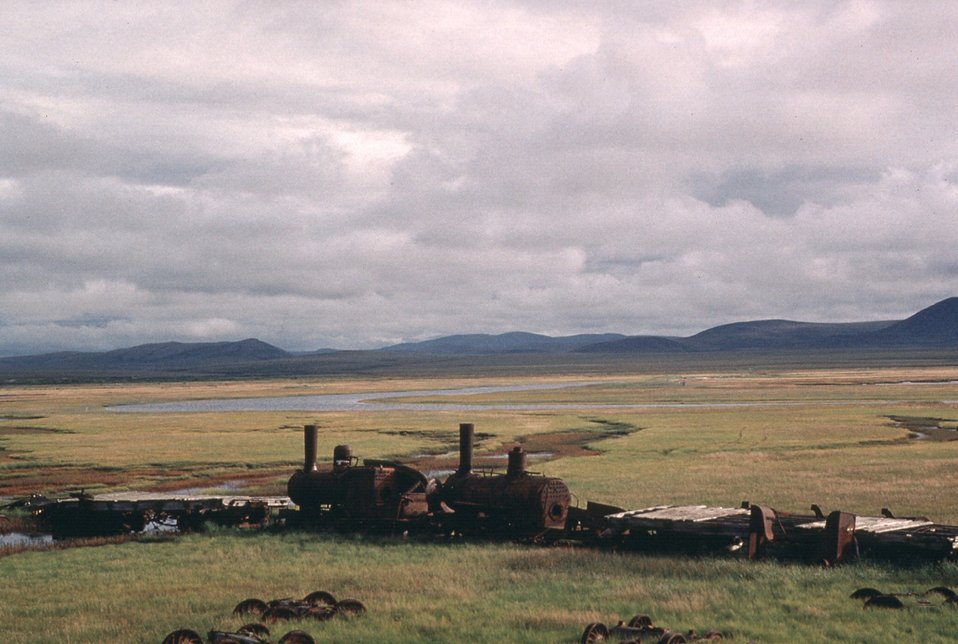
Council City and Solomon River Railroad, Solomon